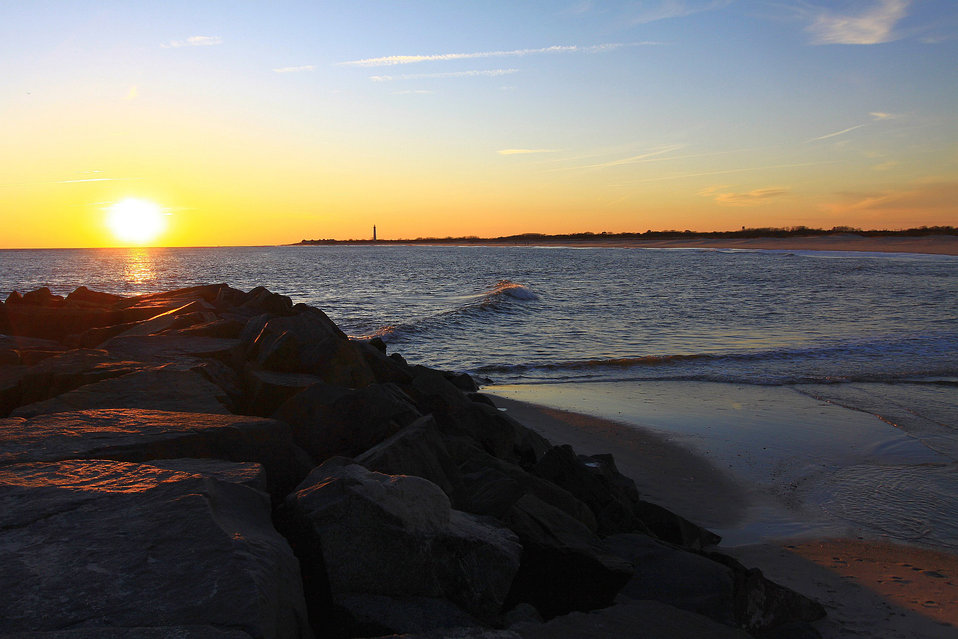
Sunset in cape may nj.